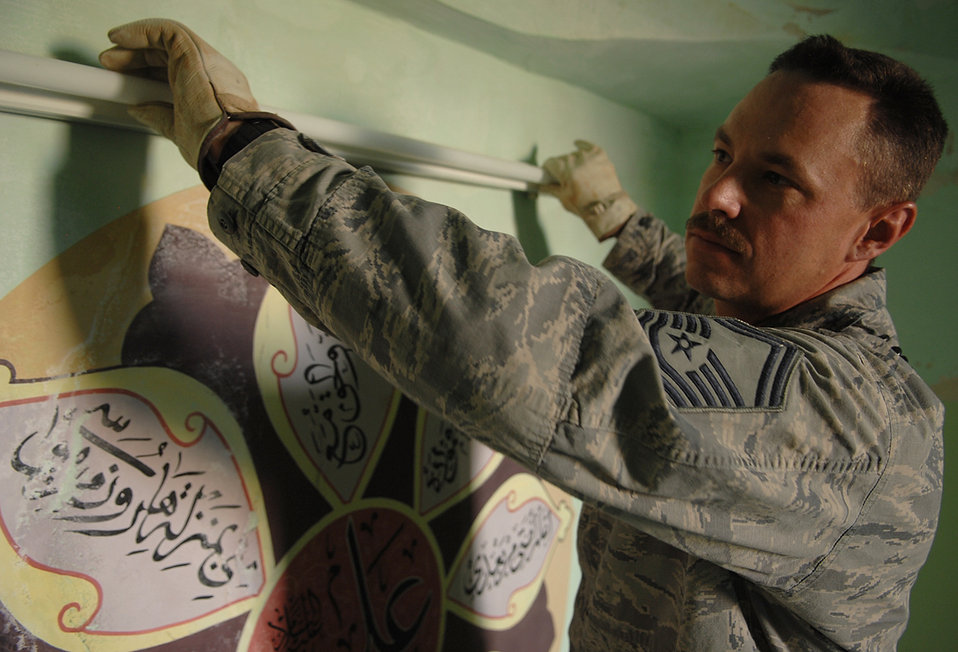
American, Iraqi Airmen partner to restore Sultan Saqi shrine

KIRKUK REGIONAL AIR BASE, Iraq – Senior Master Sgt. Gary Lytle, 506th Expeditionary Civil Engineer Squadron electrical systems superintendent, places a fluorescent light bulb into a fixture he repaired inside the Sultan Saqi Shrine in one on-base cemetery. The Palmer, Alaska, native deployed from Elmendorf Air Force Base, Alaska provided temporary power to the shrine and repaired electrical outlets in its rooms prior to an official visit in May by Iraqi family members and local leaders.